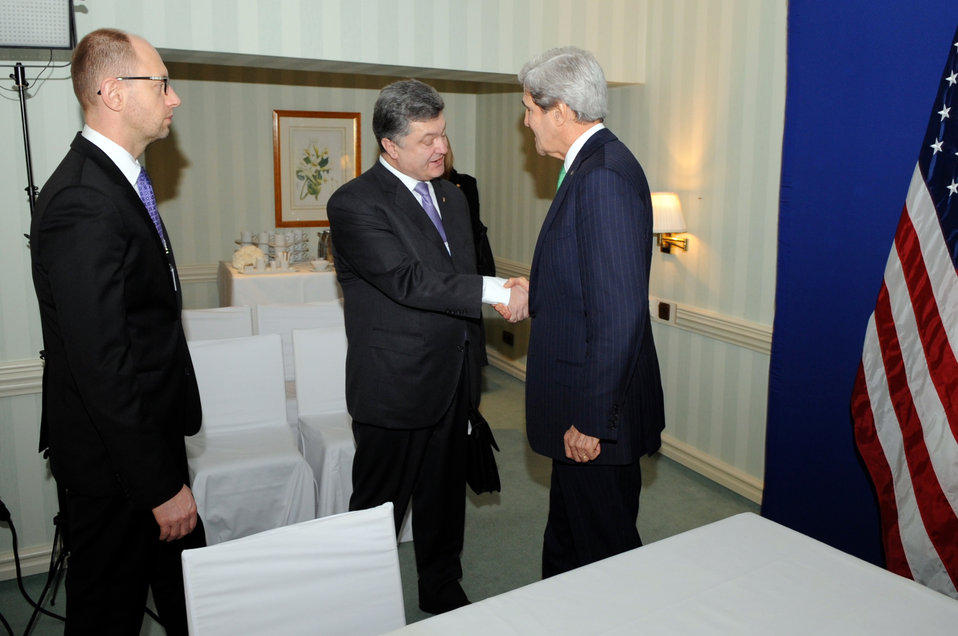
Secretary Kerry Meets Euromaiden Movement's Poroshenko Before Session With Ukranian Opposition Leaders

U.S. Secretary of State John Kerry shakes hands with Petro Poroshenko of the Euromaidan Movement before a meeting with Ukrainian opposition leaders on the sidelines of the Munich Security Conference in Munich, Germany, on February 1, 2014.